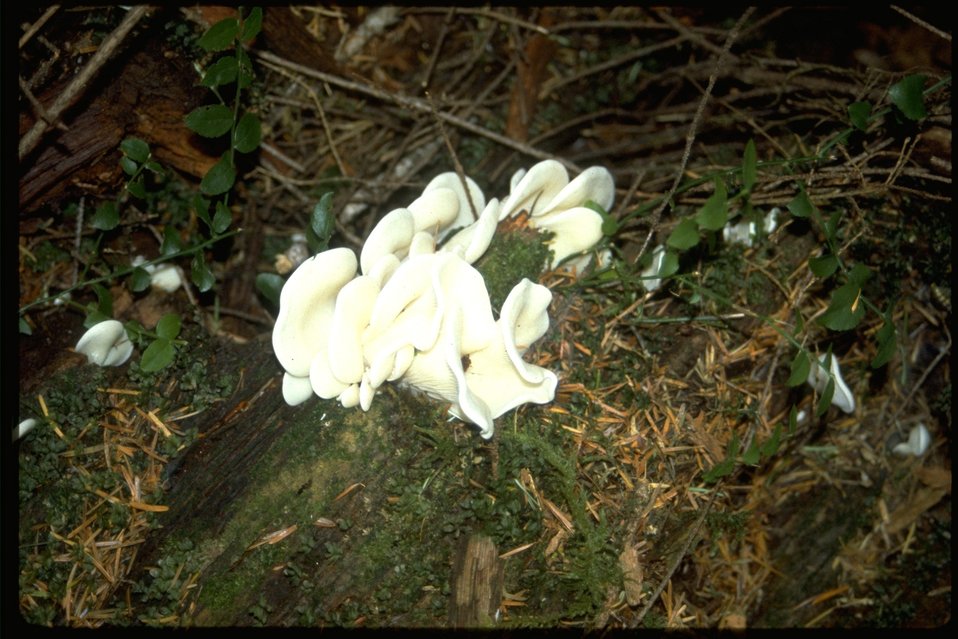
Fungi.